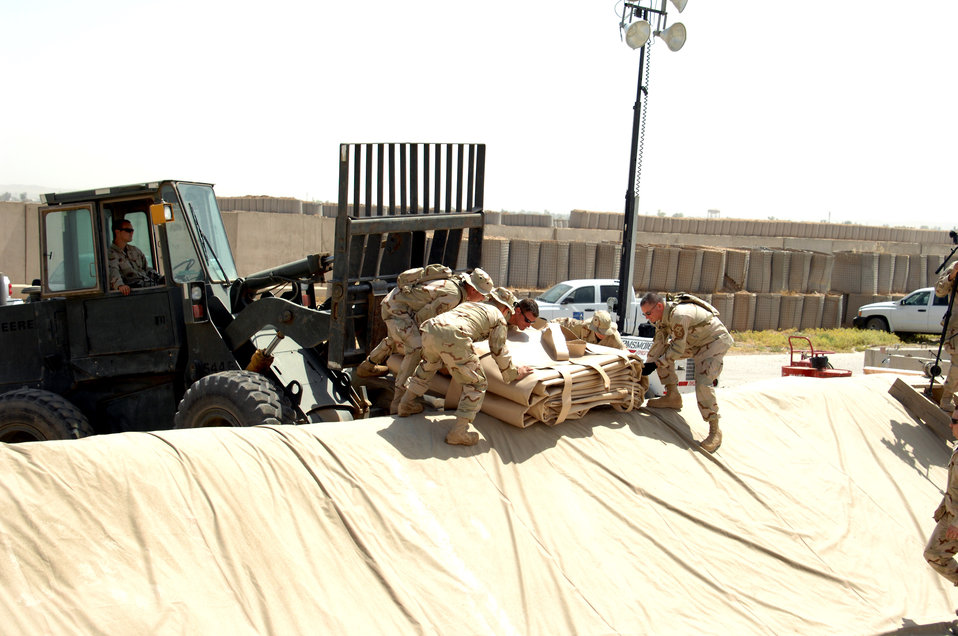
Kirkuk Airmen upgrade fuel storage

Airmen in the 506th Expeditionary Logistics Readiness Squadron pull a new fuel bladder into a fuel pit June 19 at Kirkuk Regional Air Base, Iraq. The bladder will be filled with JP-8 jet fuel. Fuel storage bladders are collapsible, flexible storage containers that provide temporary as well as long term fuel storage.